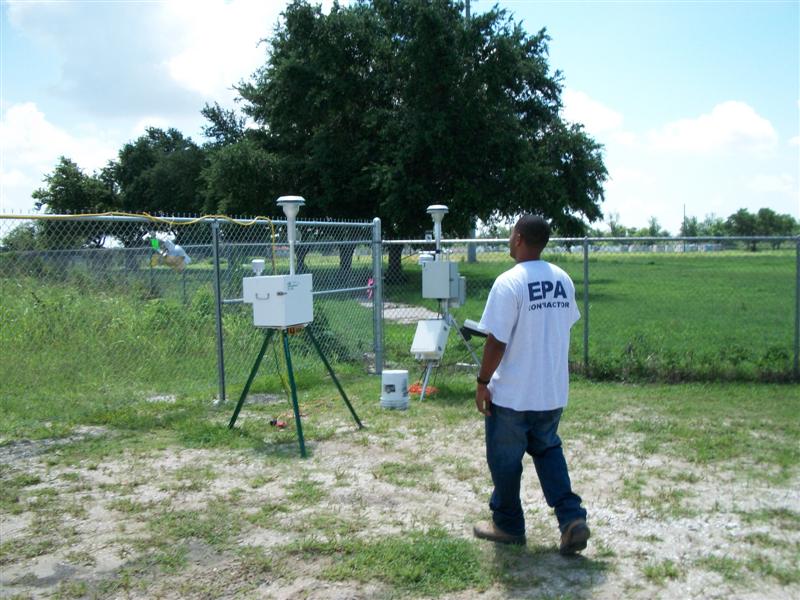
EPA Air Sampling Stations

Air sampling stations in Louisiana